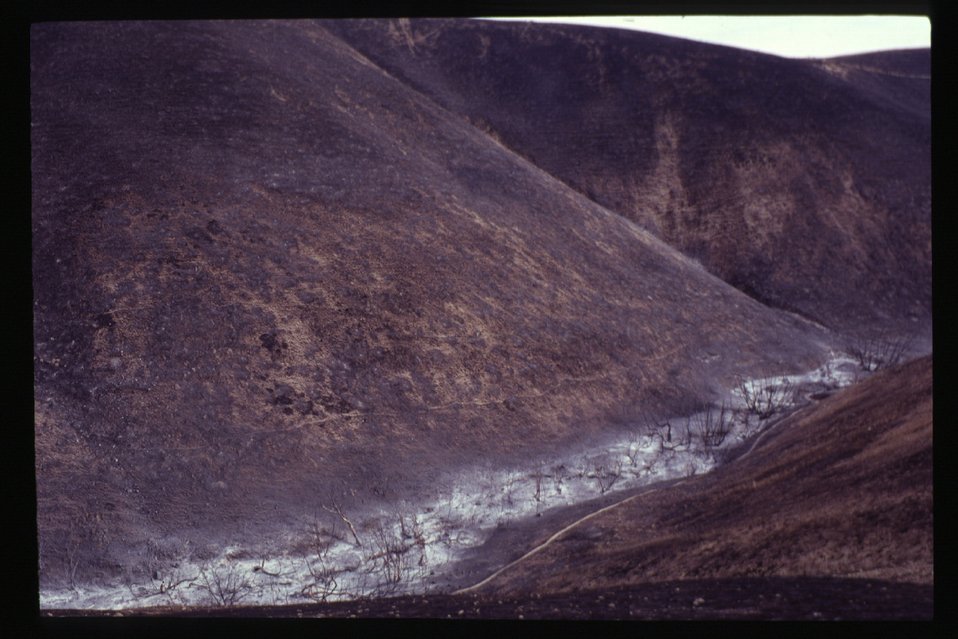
8th Stree Fire aftermath Boise Front Hulls Gulch Four Rivers Field Office LSRD Lower Snake River District